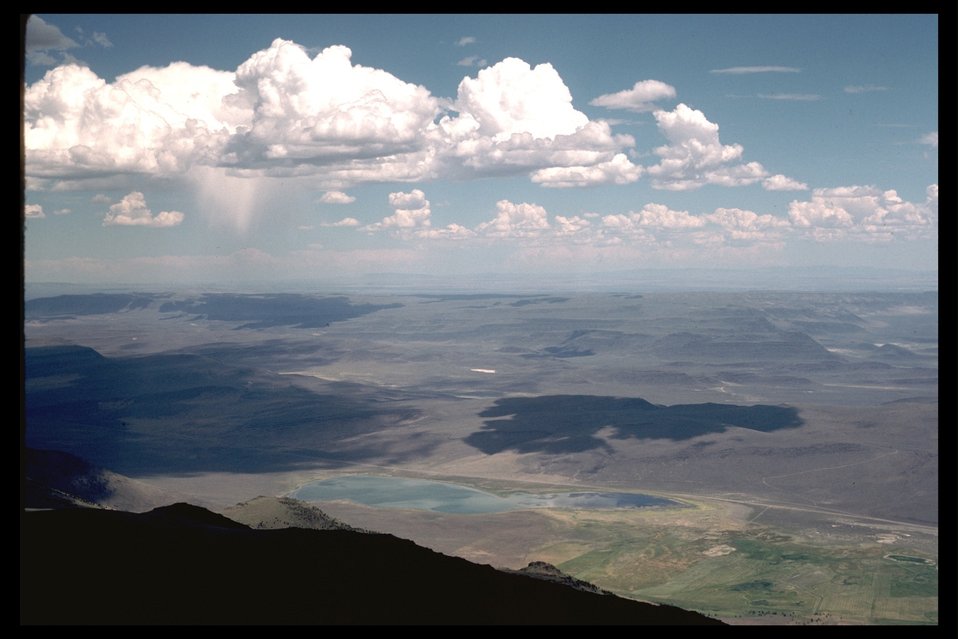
Taken from plateau looking at Sheephead Mountain. (WSA 2-72C)